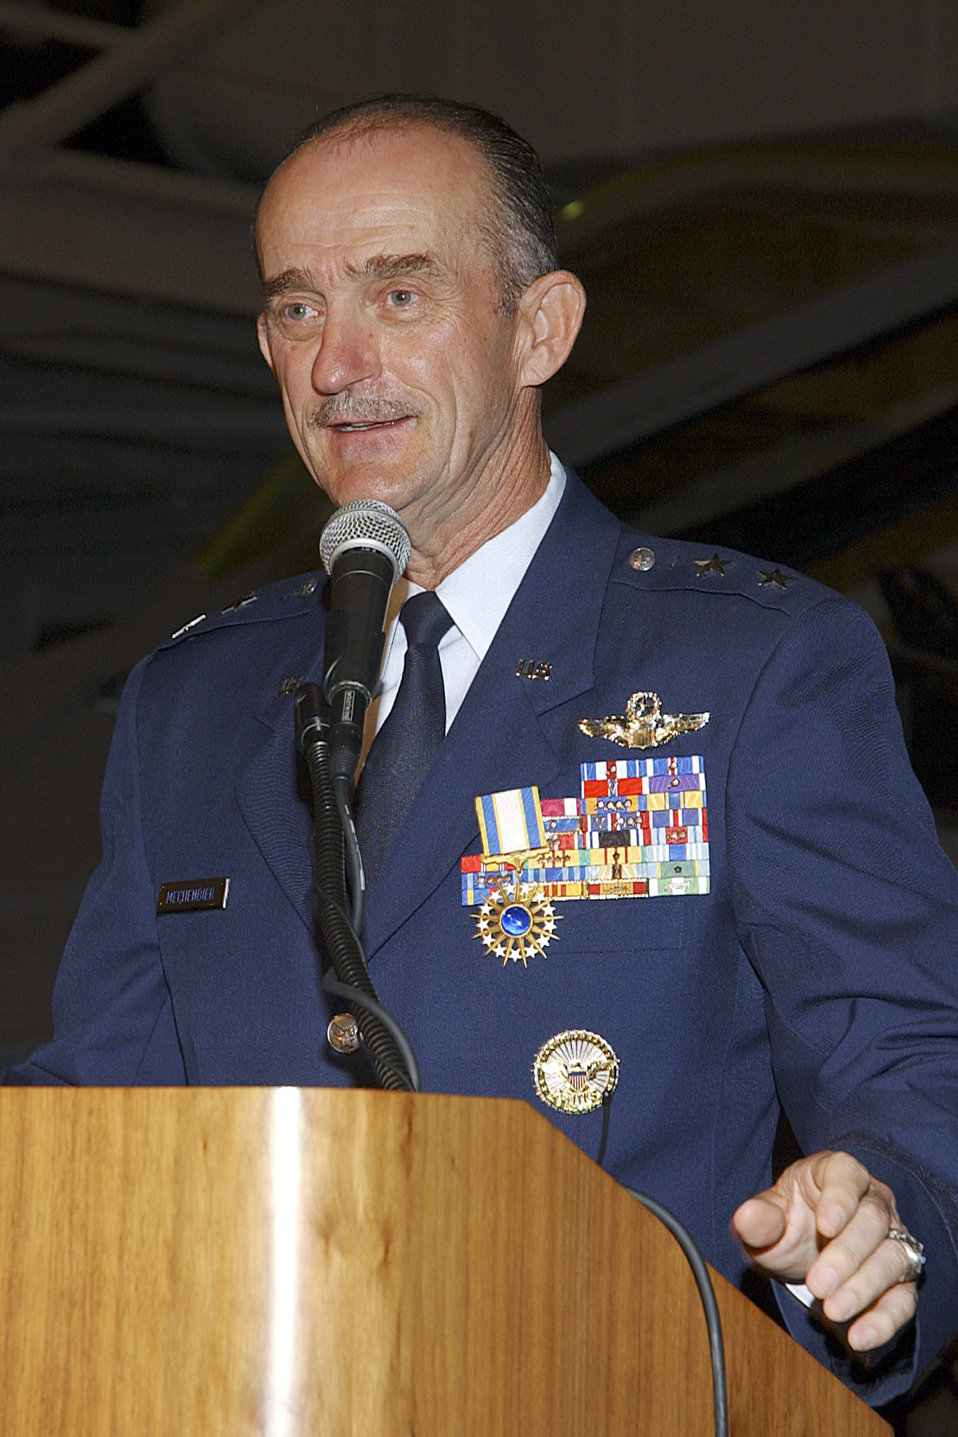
Farewell to a legend

WRIGHT-PATTERSON AIR FORCE BASE, Ohio -- Reserve Maj. Gen. Ed Mechenbier speaks to the crowd during his retirement ceremony here June 30. The general had more than four decades of active-duty, Guard and Reserve service.